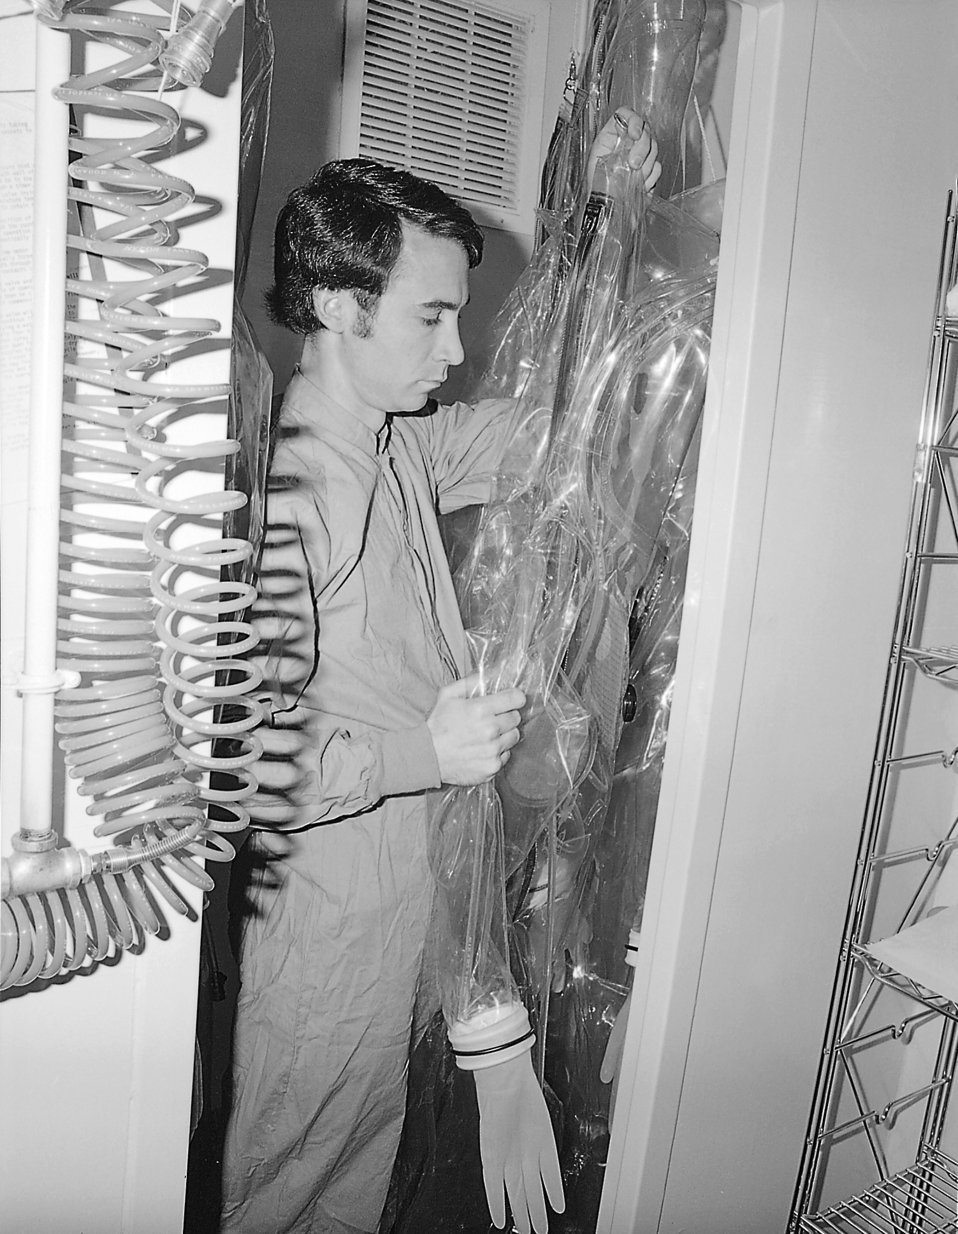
This 1978 photograph shot for purposes of creating a training package, showed Dr. J.V. Lange removing a Maximum Containment Laboratory positive-pressure suit from its storage room, which he'll don before entering the containment laboratory environment.